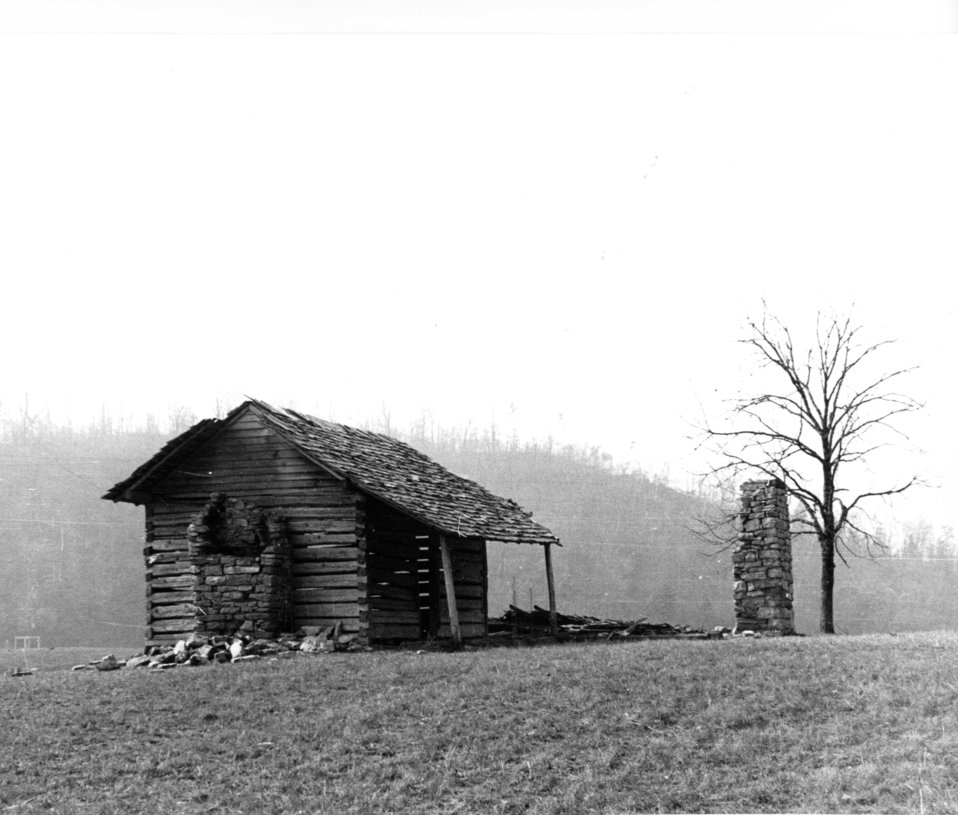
Early settlers at Oak Ridge